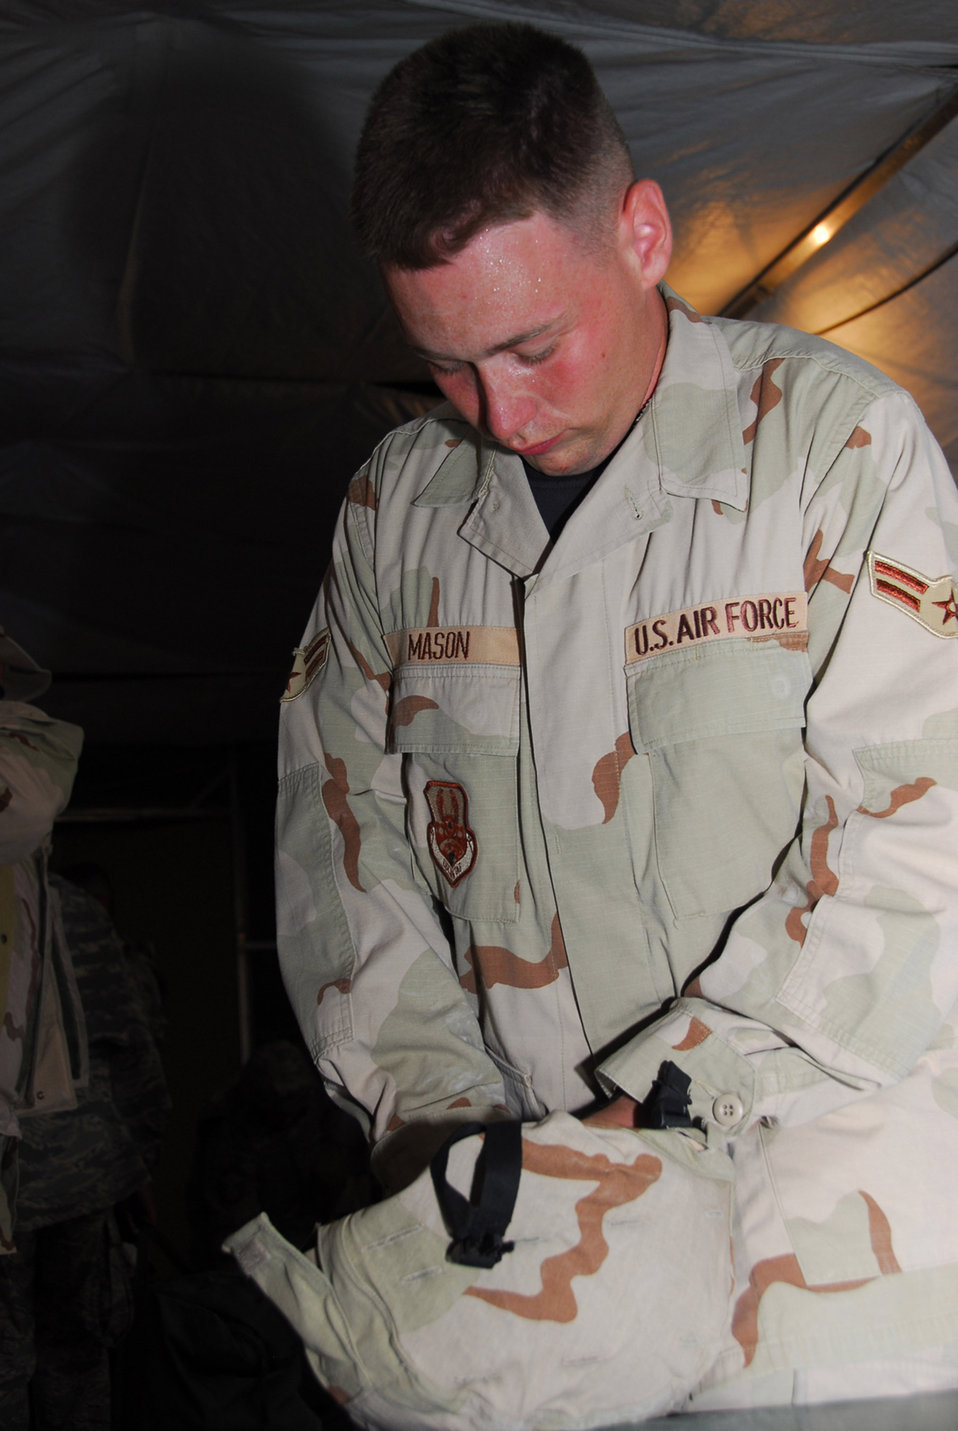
Expeditionary Theater Deployment Center equips transient Airmen

Airman 1st Class Ryan Mason attaches a desert camouflage cover to a helmet Sept. 1 in Southwest Asia. Airman Mason is deployed to the 379th Expeditionary Logistics Readiness Squadron Expeditionary Theater Distribution Center.